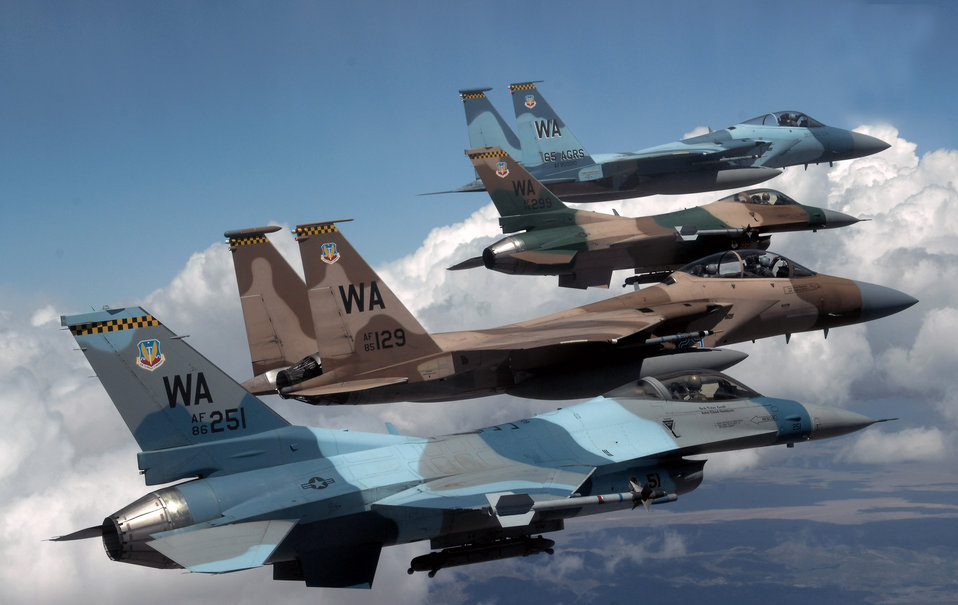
Aggressors provide challenging, realistic threat replication

A flight of Aggressor F-15 Eagles and F-16 Fighting Falcons fly in formation 5 June over the Nevada Test and Training Ranges. The jets are assigned to the 64th and 65th Aggressor squadrons at Nellis Air Force Base, Nev. The F-15's superior maneuverability and acceleration are achieved through low wing-loading (the ratio of aircraft weight to its wing area), which is a vital factor in maneuverability and a high thrust-to-weight ratio, which enables the aircraft to turn tightly without losing airspeed. The F-16 can fly more than 500 miles (860 kilometers), deliver its weapons with superior accuracy, defend itself against enemy aircraft, and return to its starting point.